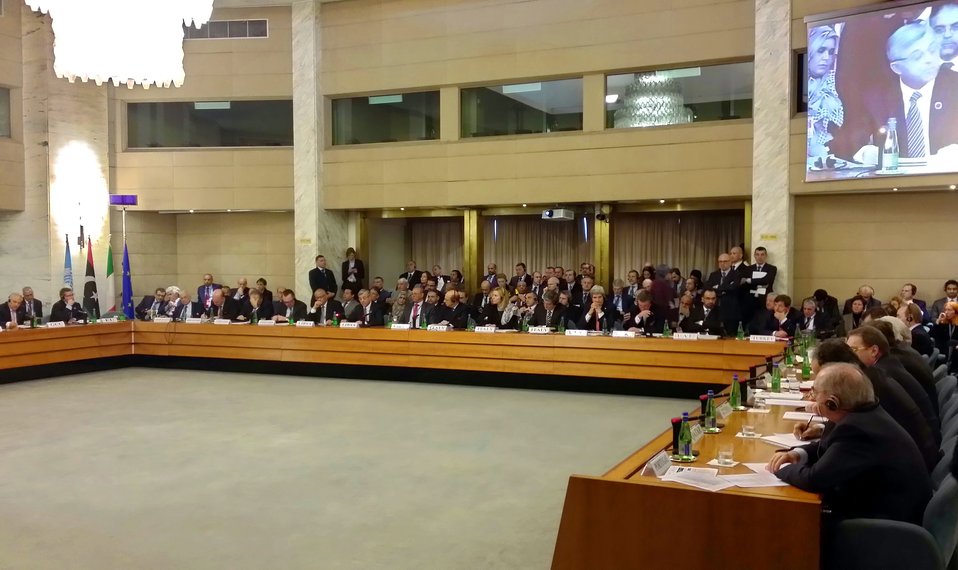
Secretary Kerry Participates in the International Conference on Libya

U.S. Secretary of State John Kerry joins other participants during the plenary session at the International Conference on Libya in Rome, Italy on March 6, 2014.